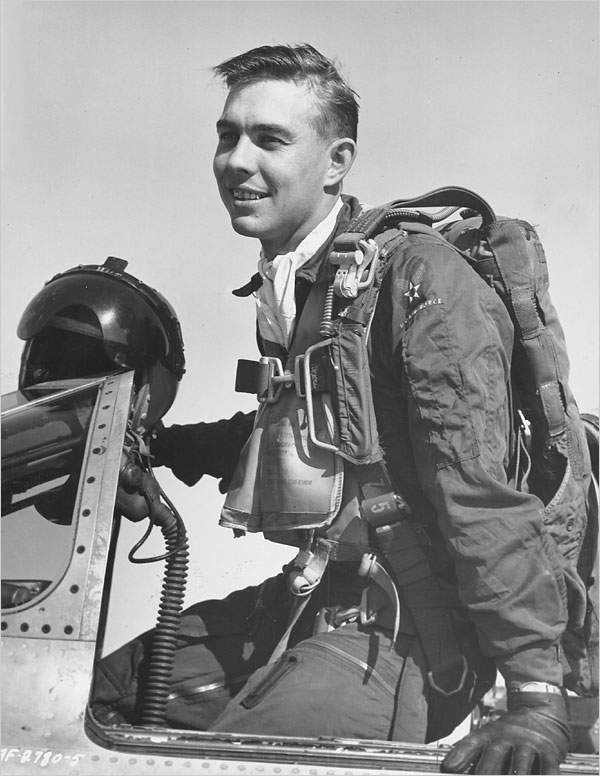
Korean War ace passes away

Capt. Harold E. Fischer Jr. returning from a Korean War combat air patrol in 1952.